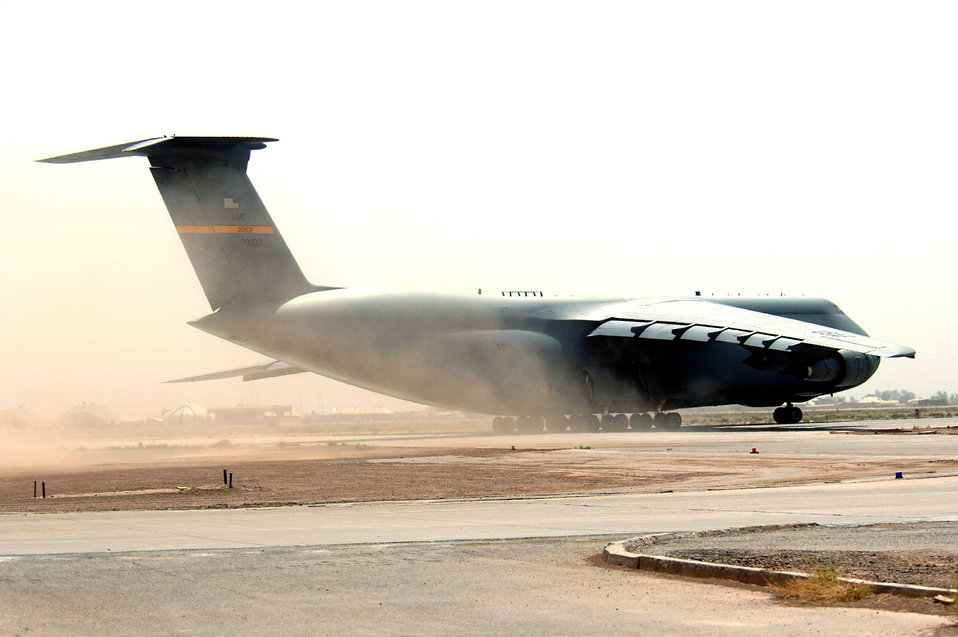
Oct. 13 airpower summary: C-5s resupply coalition forces

A C-5 Galaxy lands at air base in Southwest Asia
Coalition aircraft flew more than 120 airlift sorties; delivered 300 tons of cargo and more than 3,400 passengers were transported Oct.13. This included approximately 24,000 pounds of troop resupply air-dropped in Afghanistan.